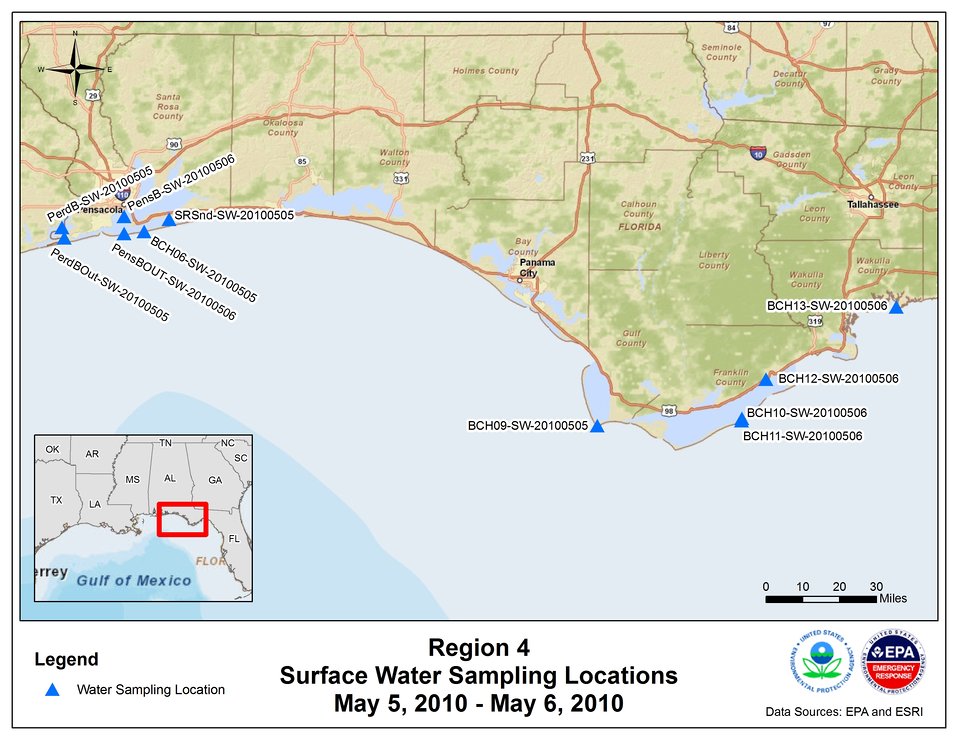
EPA Water Sampling Locations May 5-6, 2010